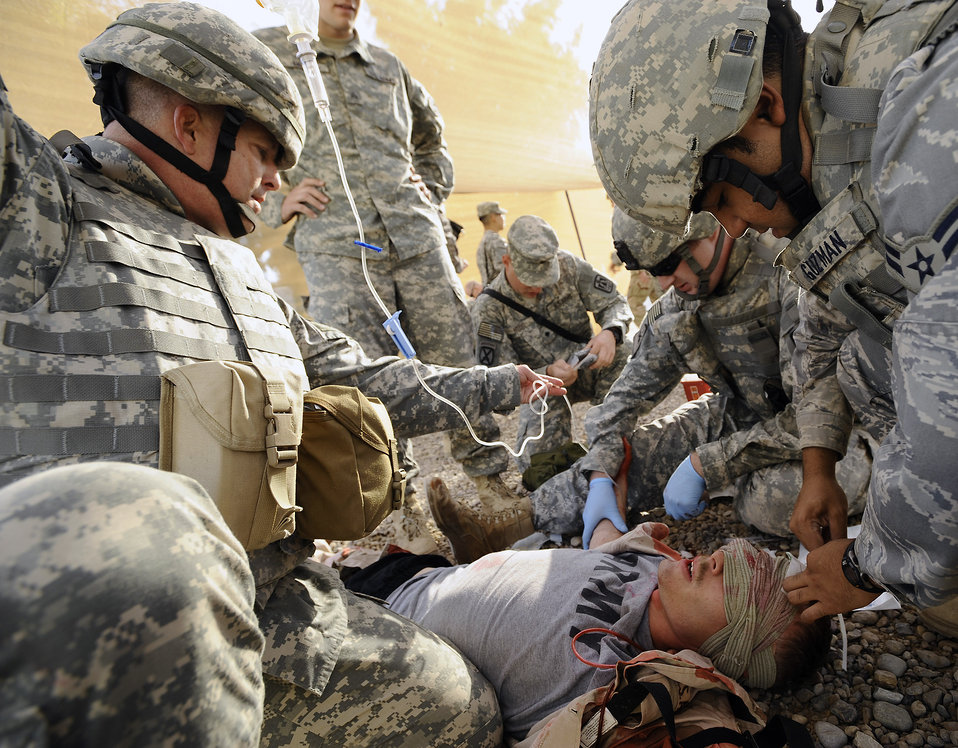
Airmen train to start warrior care on the battlefield

Airman 1st Class Jonathan Guzman (right) attaches tape to Army Spc. Jeremy Gary's head to indicate the time and date he received a tourniquet during a Combat Lifesaver Course Nov. 12 at Joint Base Balad, Iraq. The Army, Air Force and Navy conducted a mass casualty exercise as the final training scenario of a joint CLS course. Airman Guzman, a security forces apprentice with the 532nd Expeditionary Security Forces Squadron, is deployed from Lackland Air Force Base, Texas.